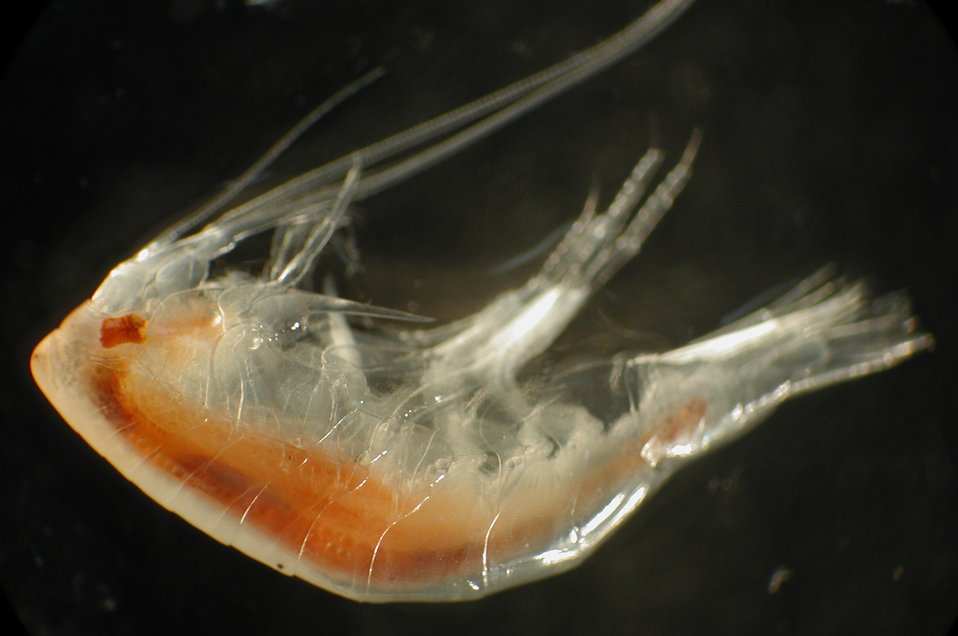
Zooplankton. Copepod.